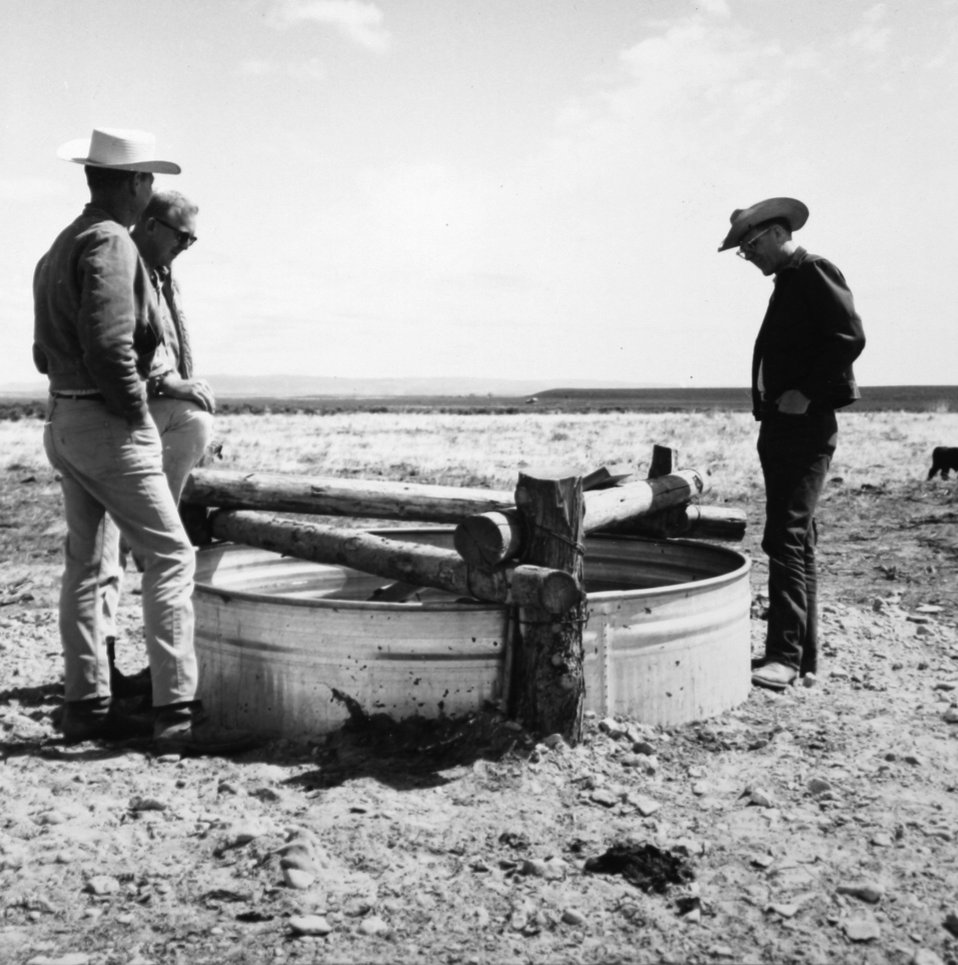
Stock water trough on undergournd pipeline at Big Bird Seeding east of Wagontire, Oregon. May, 1954, L-R: Carl McGrillis, Reinard Okerson, Kent Giles (District Manager)